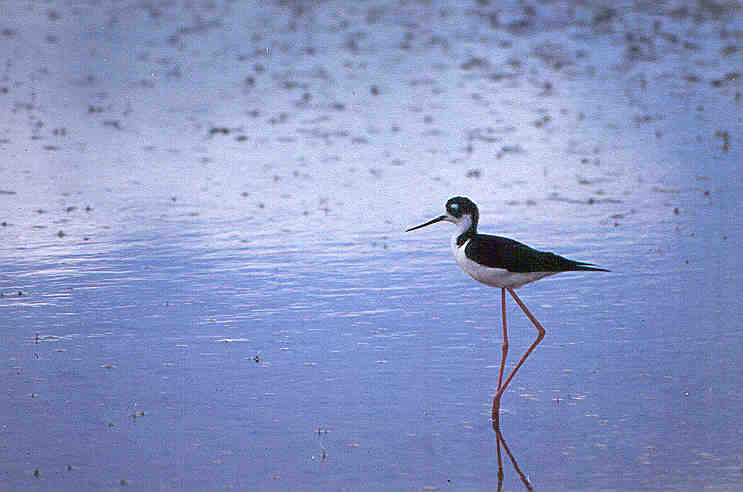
Black-necked Stilt on Bowdoin NWR

Black-necked stilt in a wetland at Bowdoin NWR.